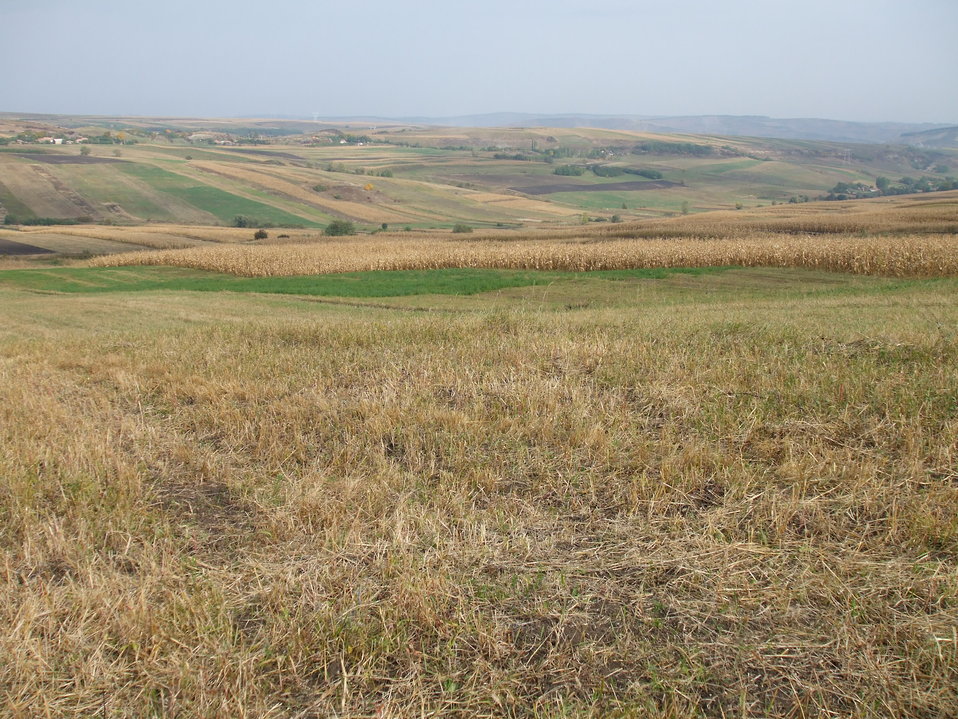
Română: Imagini-Damburile,Cluj